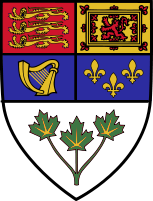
The shield from the en:Coat of arms of Canada, between 1921 and 1953. The shield was created by a Royal Warrant in 1921, thus out of Canadian Copyright. [1]